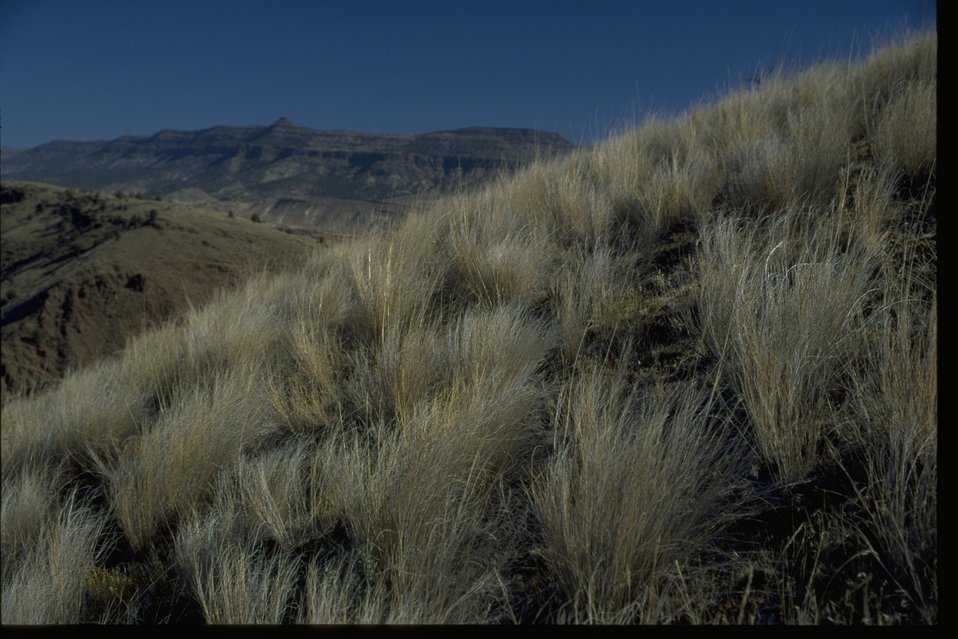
View of upland vegetation: sage grass.